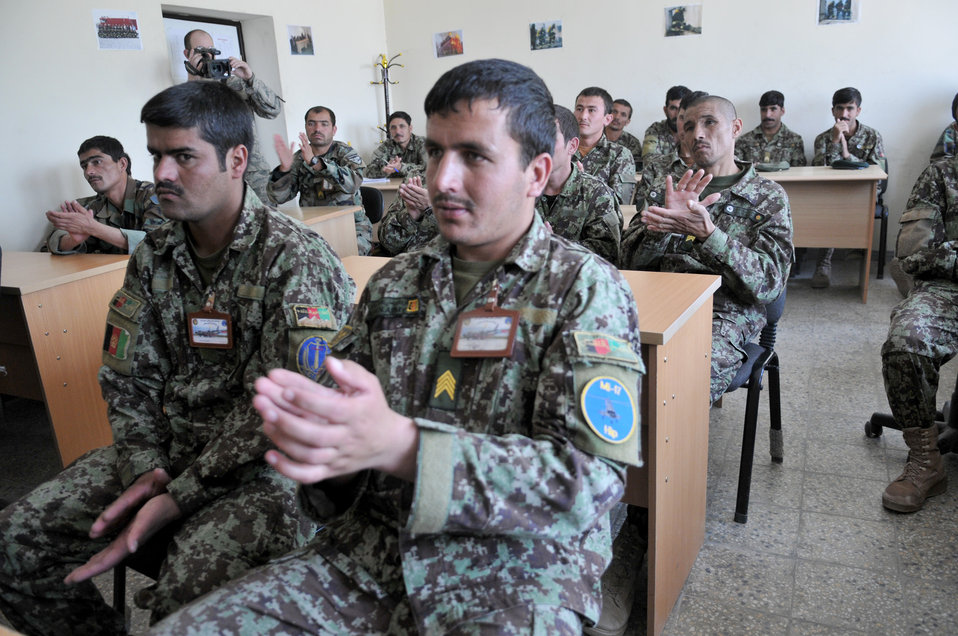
Firefighters donate to Afghans

Afghan firefighter trainees show their excitement after Master Sgt. Edward Nowak presented Nomex fire-protection hoods inside the Afghan air force fire fighting training complex May 28, 2011, in Kabul, Afghanistan. The Nomex hoods were donated by the Robeson County Firefighters Association in Parkton, N.C. Sergeant Nowak is a 440th Air Expeditionary Advisory Squadron C-27 production superintendent adviser and volunteer firefighter.